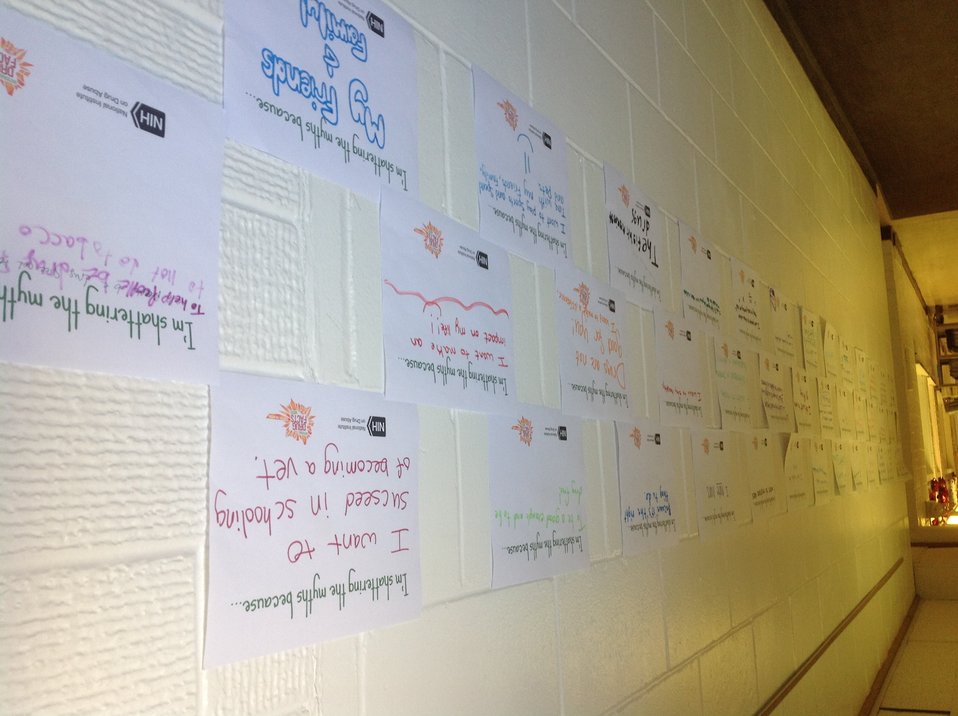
Getting the Word Out

Teenagers from the Van Buren County SAFE Coalition's, Youth Leadership Council (YLC) in Keosauqua, Iowa participate in various events during National Drug Facts Week, 2014.